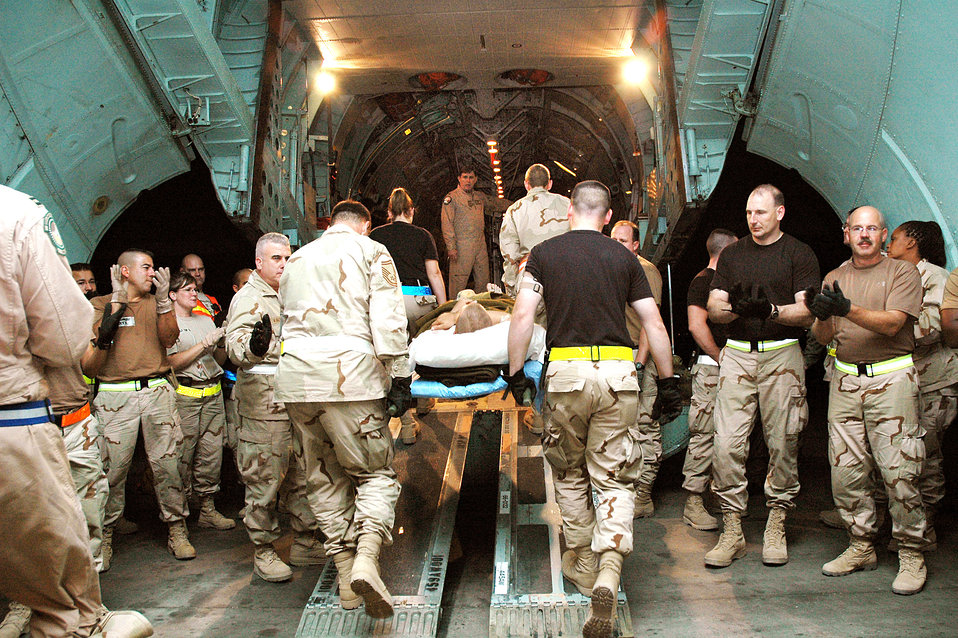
C-141 makes proud departure

BALAD AIR BASE, Iraq -- Airmen applaud and cheer, thanking injured Soldiers and Marines for their service in the war on terrorism as they are brought aboard the last C-141 Starlifter aeromedical evacuation flight from a combat zone Sept. 29. The aircraft, assigned to Air Force Reserve Command's 445th Airlift Wing at Wright-Patterson Air Force Base, Ohio, transported the injured servicemembers to Landstuhl Regional Medical Center, Germany, for treatment. The flight concluded more than three decades of overseas aeromedical evacuation missions with the aircraft, beginning during the Vietnam War.